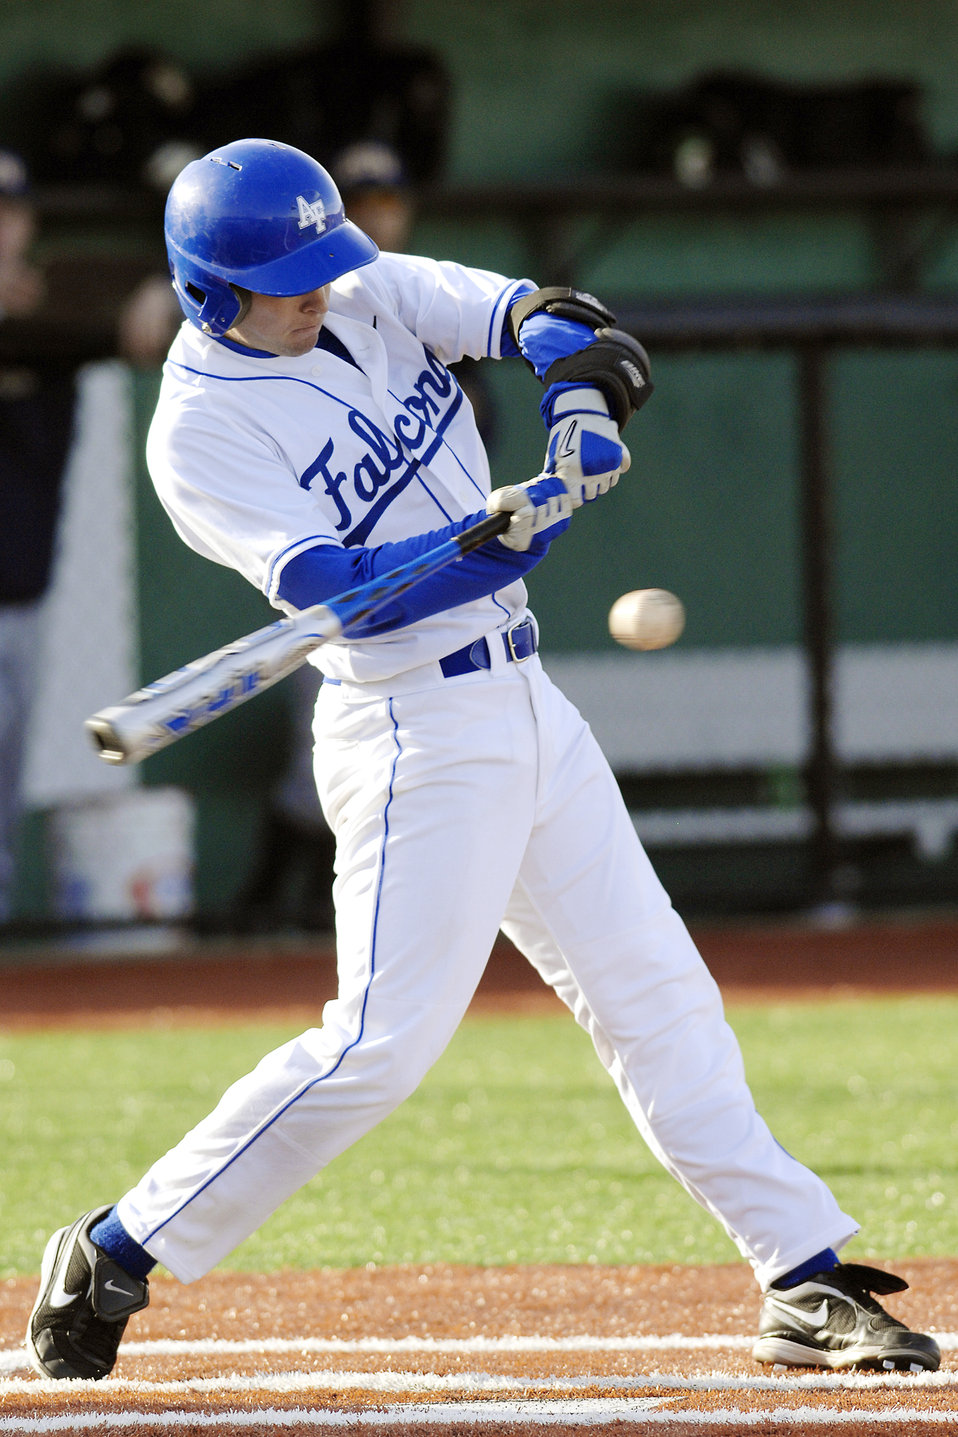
Falcons win baseball home opener

Falcon junior outfielder Nathan Carter connects during a 15-5 victory over Colorado Christian in the Air Force home-opener at the U.S. Air Force Academy's Falcon Field March 2, 2010. Carter went 2-for-3 with one runs scored. The win improved the Falcons to 2-6 and dropped the Cougars to 6-9.